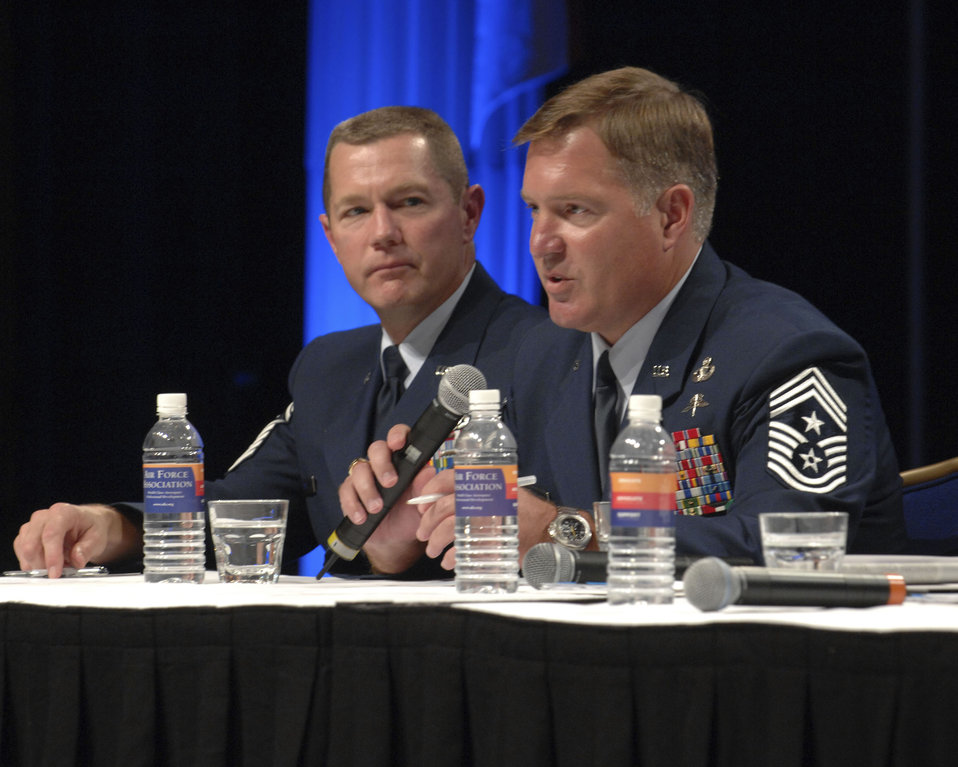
Command chief panel discusses enlisted issues

Chief Master Sgt. Dave Popp listens as Chief Master Sgt. Mike Gilbert answers a question during the Command Chiefs' Forum at the Air Force Association's Air & Space Conference and Technology Exposition in Washington, D.C., Sept 24. Chief Popp is the Air Combat Command command chief, and Chief Gilbert is the Air Force Special Operations Command command chief.